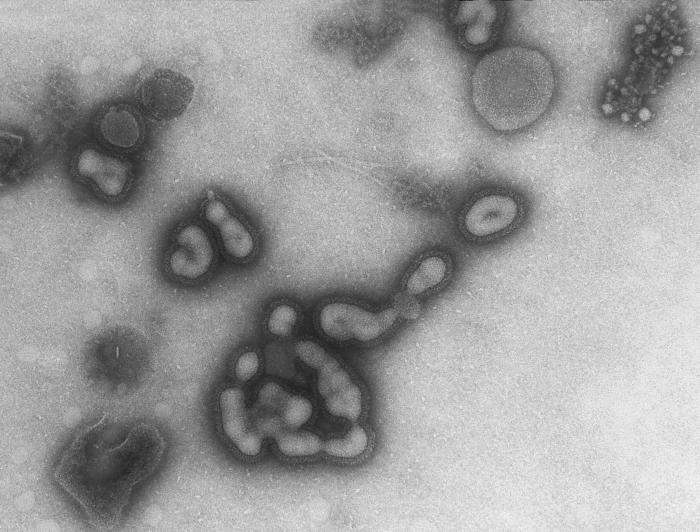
This transmission electron micrograph (TEM) depicted Russian influenza-A H1N1, (A/USSR/90/77 strain), virions, which had been magnified 189,000x.Influenza type A viruses are divided into subtypes based on two proteins on the surface of the virus. These proteins are called hemagglutinin (H) and neuraminidase (N). The current subtypes of influenza A viruses found in people are A(H1N1) and A(H3N2). Influenza B virus is not divided into subtypes. Influenza A (H1N1), A(H3N2), and influenza B strains are included in each year's influenza vaccine.